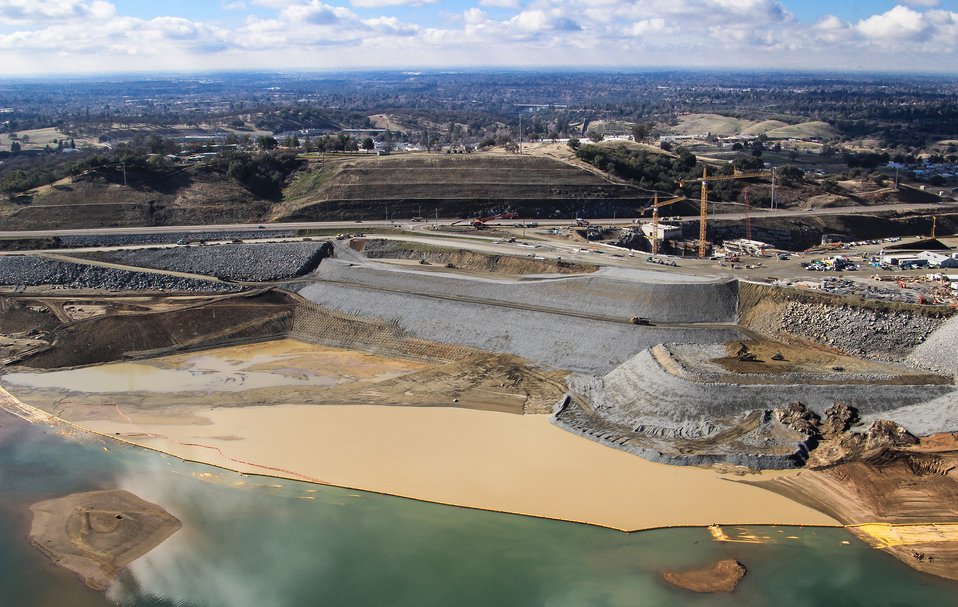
Auxiliary Spillway progress surges forward

Contractors for the U.S. Army Corps of Engineers have almost completed building a temporary embankment dam in Folsom Lake. This dam will allow construction crews to excavate and blast the remaining rock and dirt material between the lake and the control structure. The control structure will have water touching it by May 2017, providing dam safety and flood protection to the Greater Sacramento area earlier than the project completion date of Oct. 2017. (Photo from Kiewit Infrastructure West Co./Released)